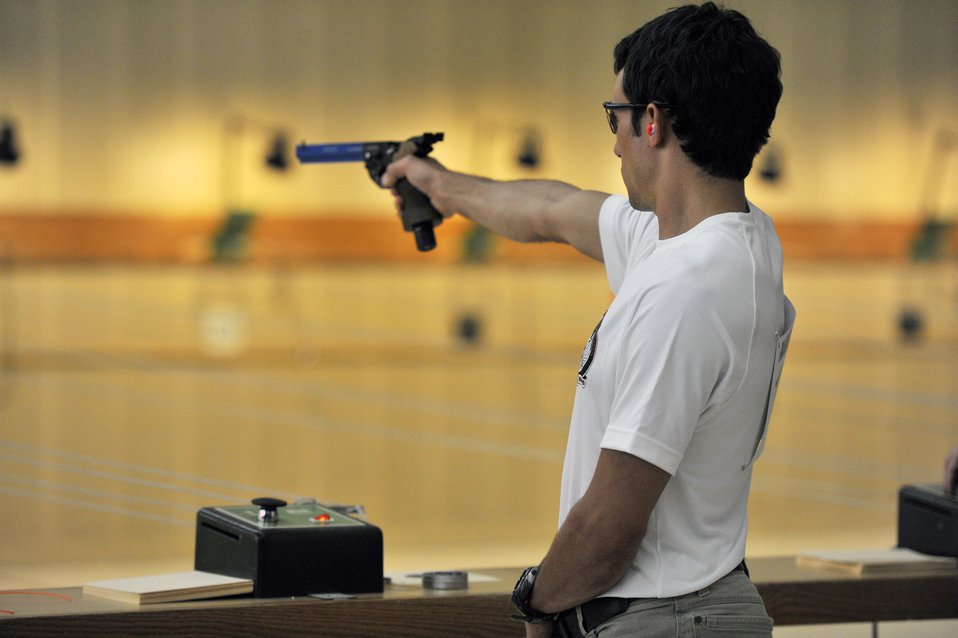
prelims shooting competition

Marc Esposito takes aim in the shooting competition of the 2011 Warrior Games May 17, 2011, at the U.S. Olympic Training Center in Colorado Springs, Colo. More than 200 wounded warriors from all the military services are competing in paralympic-style athletic events May 16 through 21.